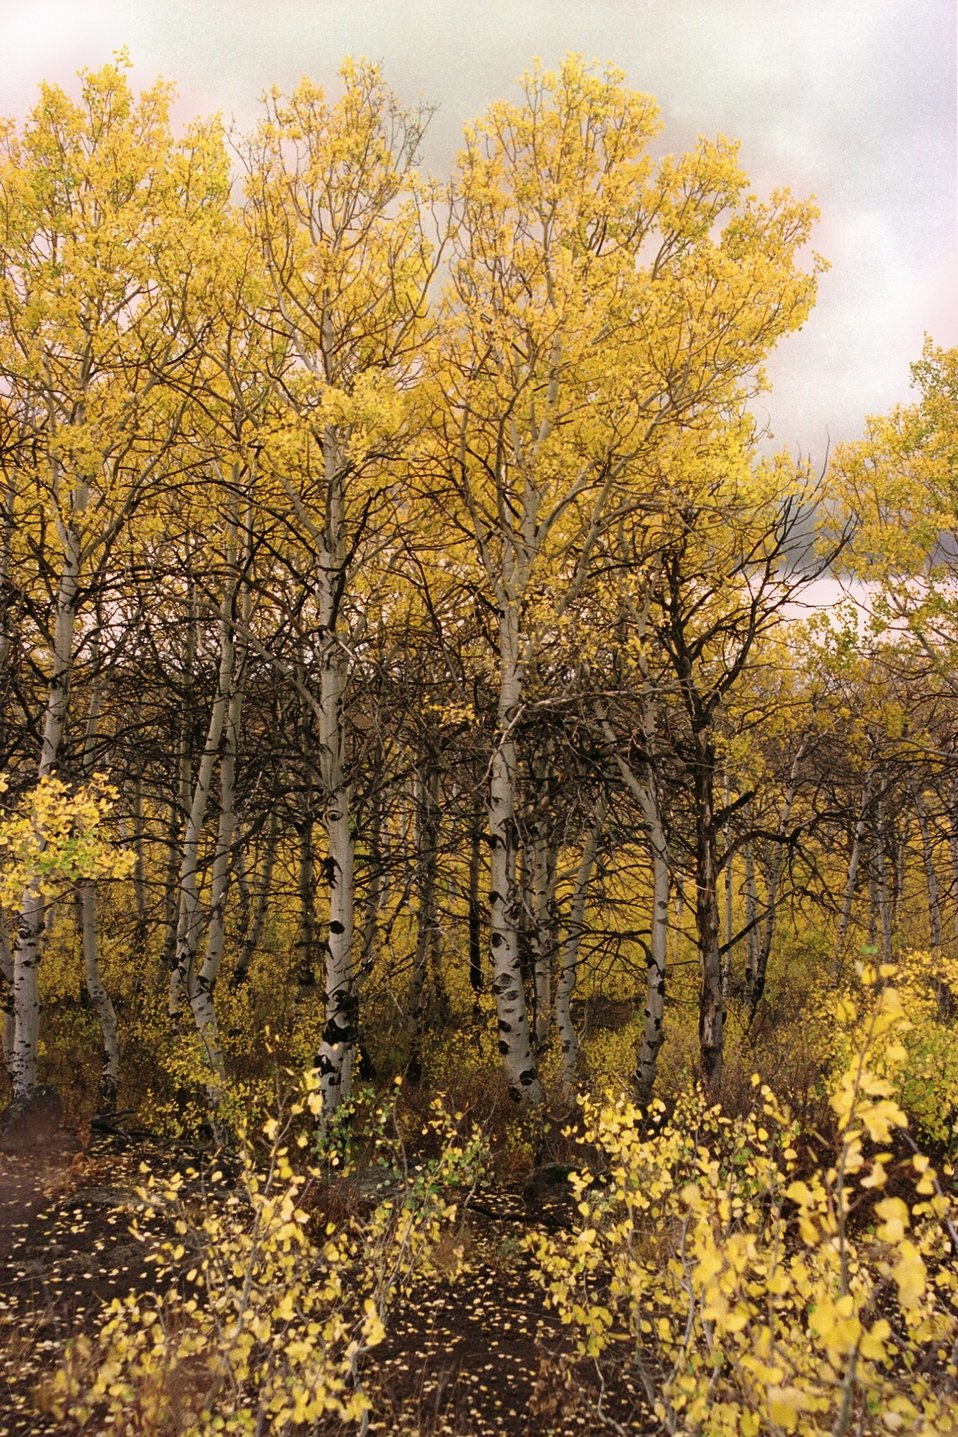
Aspens at Fish Lake, Steen's Mountain.